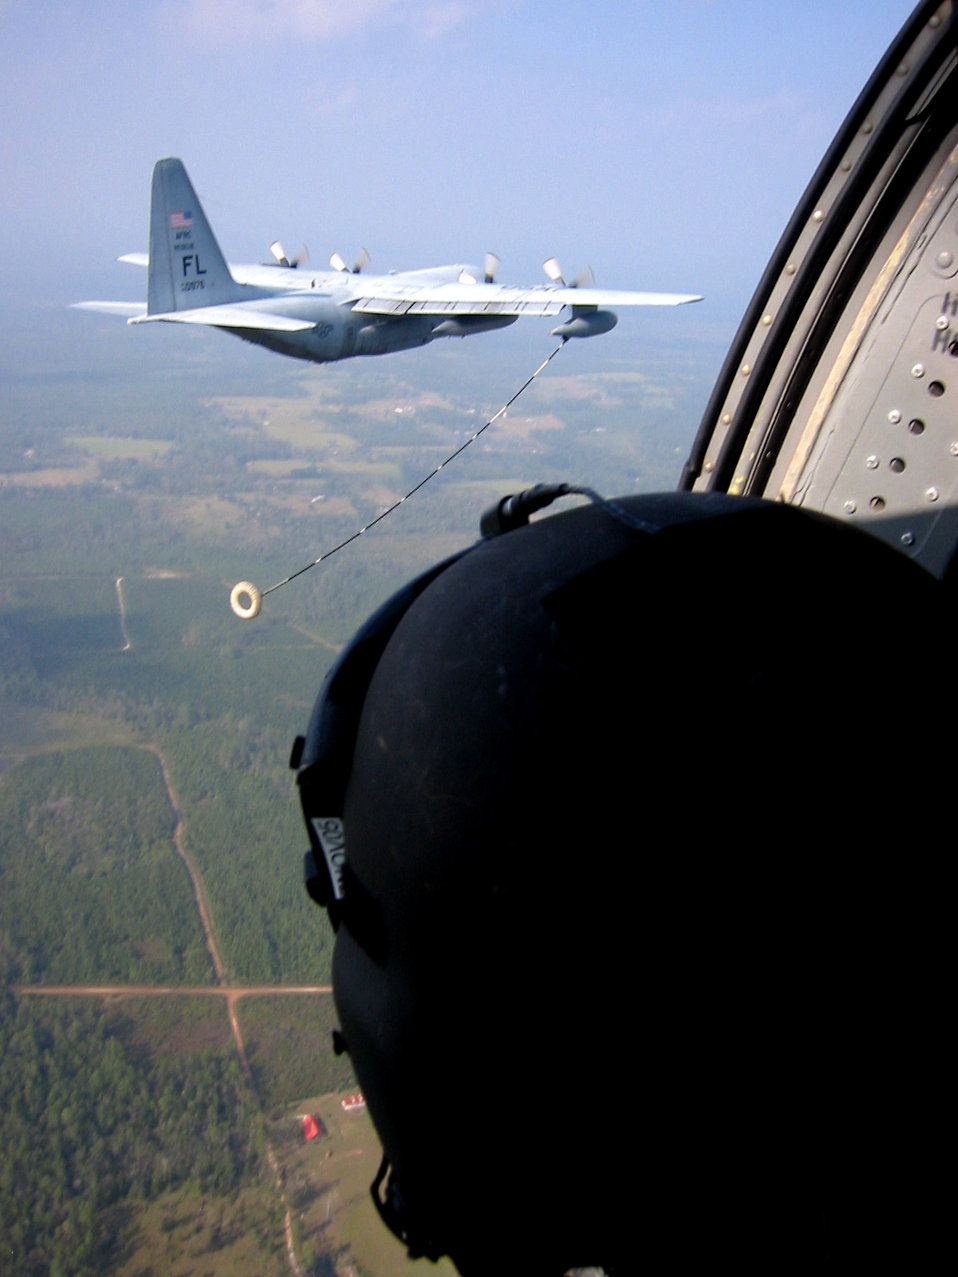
Search and rescue

RANDOLPH AIR FORCE BASE, Texas -- An HC-130 aerial tanker drags a drogue refueling device, waiting for an HH-60 Pave Hawk helicopter to move into position and refuel Sept. 25. The tanker, deployed from the Air Force Reserve's 920th Rescue Wing at Patrick Air Force Base, Fla., refueled four helicopters performing search-and-rescue missions that day.